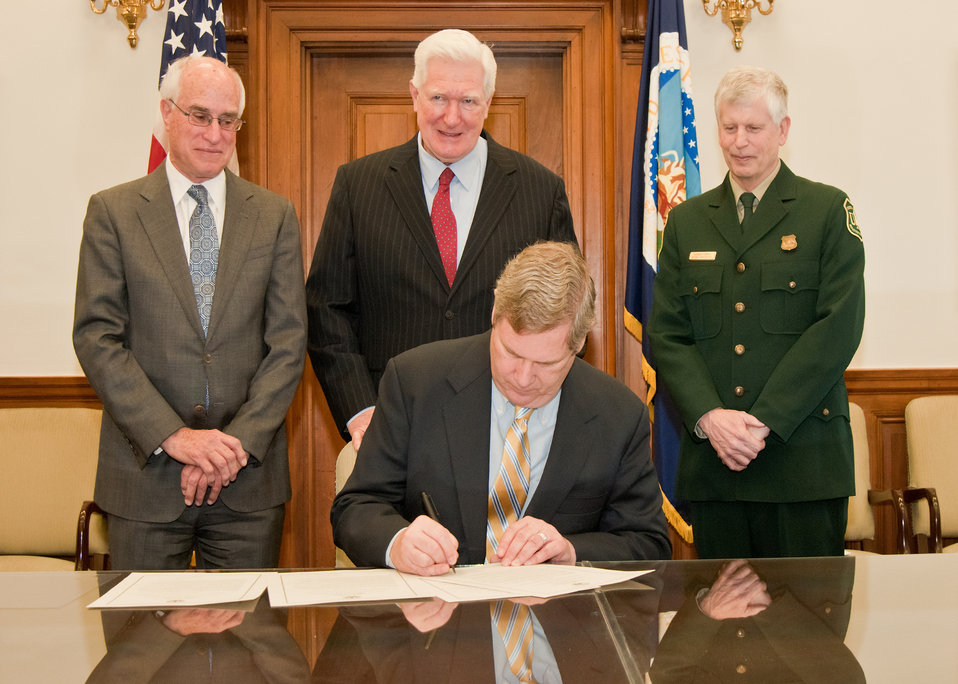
Agriculture Secretary Tom Vilsack signs the centennial of the 'Week's Act Proclamation.' Behind Secretary Vilsack from the left are: Harris Sherman, Undersecretary, National Resources and Environment, Congressman Jim Moran, VA, and Tom Tidwell, Chief, National Forest Service. The event took place at the U.S. Department of Agriculture in Washington, D.C., on Wednesday, March 2, 2011. The 'Week's Act Proclamation' named for Representative John Weeks of Massachusetts became law March 1, 1911 and ranks among the significant natural resource conservation achievements of the 20th Century which led to the creation of the National Forests throughout the east and additions of national forests and grasslands across the United States and Puerto Rico.